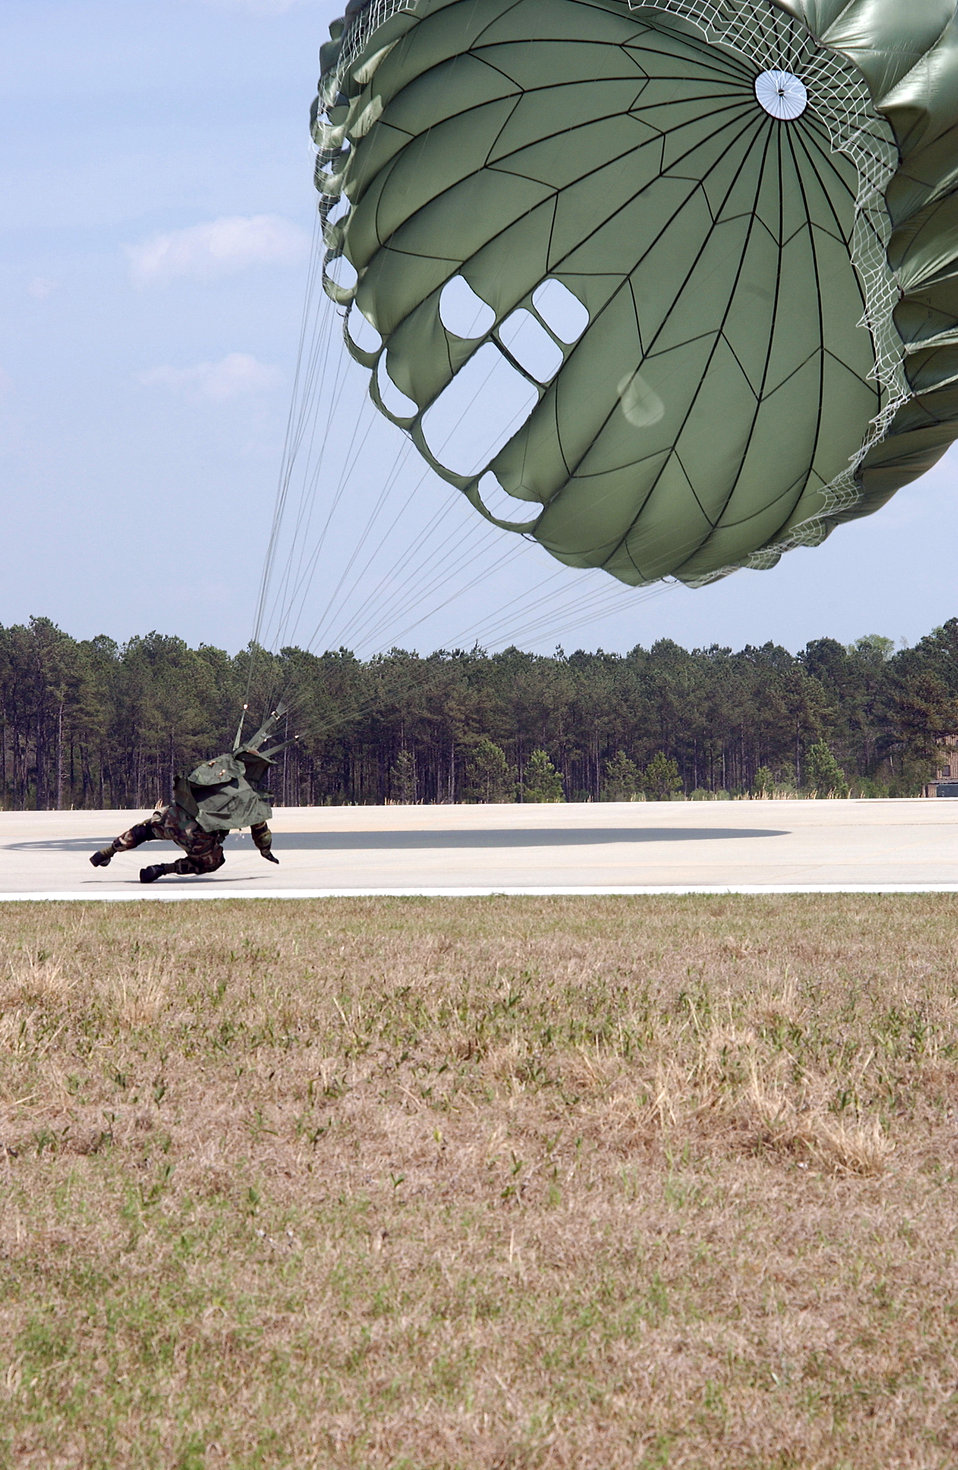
Happy landing

MOODY AIR FORCE BASE, Ga. -- A member of the 820th Security Forces Group lands on the Drop Zone here after jumping out of an HC-130 aircraft during a static line jump March 21.